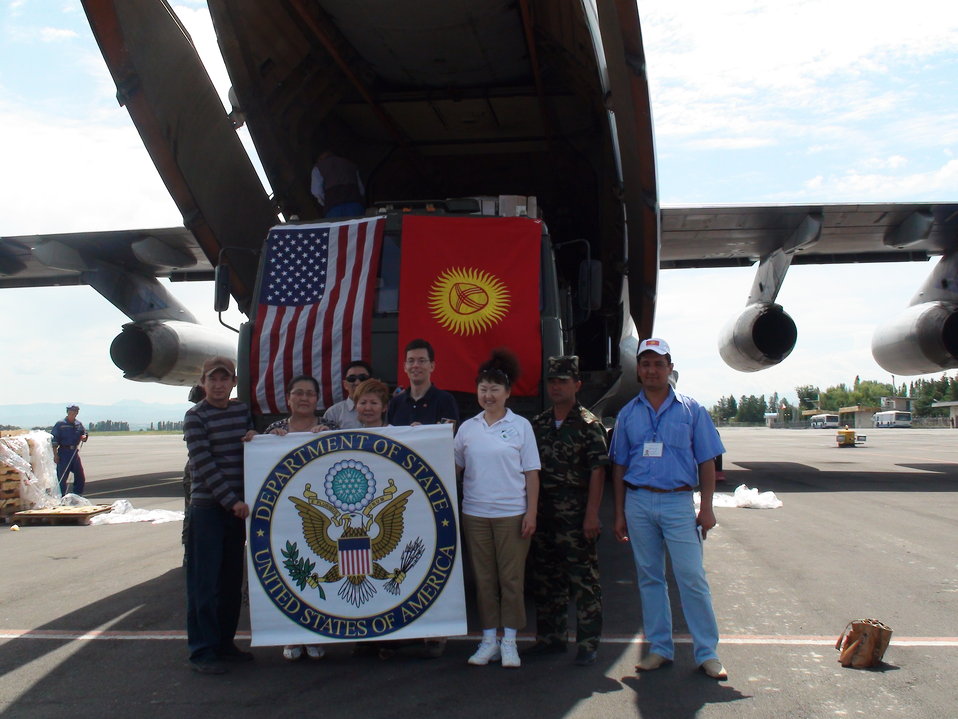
U.S. Embassy Bishkek FSO With Relief Workers and Osh Airport Staff

U.S. Embassy Bishkek Foreign Service Officer Andrew B. Paul, center, poses for a photo with relief workers and Osh airport staff to mark the arrival of humanitarian aid in Osh, Kyrgyzstan, on June 26, 2010.